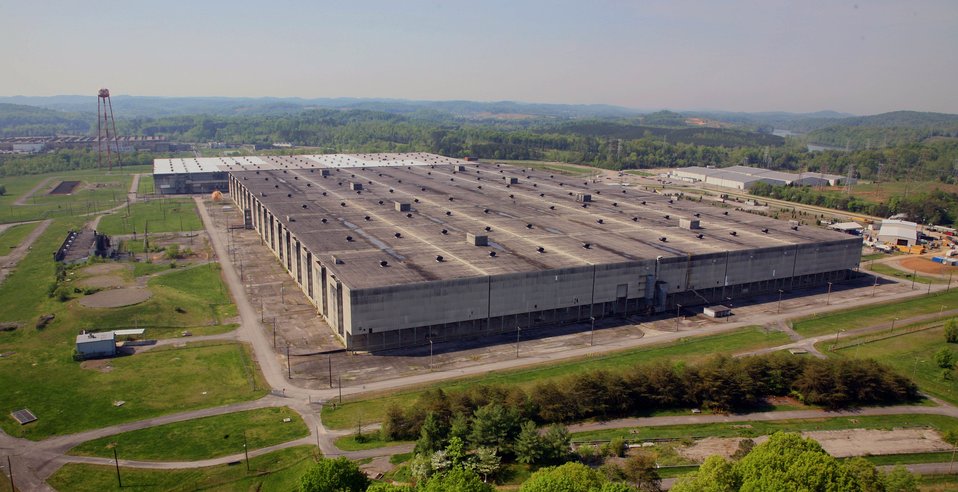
Oak Ridge Finishes Largest Site Demolition to Date

An aerial photo shows Building K-33 before demolition.

July 2012 - This month, the Oak Ridge Environmental Management (EM) program finished the final phase of the Building K-33 demolition project. Workers with LATA-Sharp Remediation Services, the prime contractor for the project, removed areas of contaminated soil, backfilled the area with topsoil and seeded the land with grass. In April, they removed a 32-acre concrete slab that served as the foundation for the former 1.4 million-square-foot former gaseous diffusion plant in the East Tennessee Technology Park (ETTP). Constructed in 1954, the K-33 facility enriched uranium until 1985.